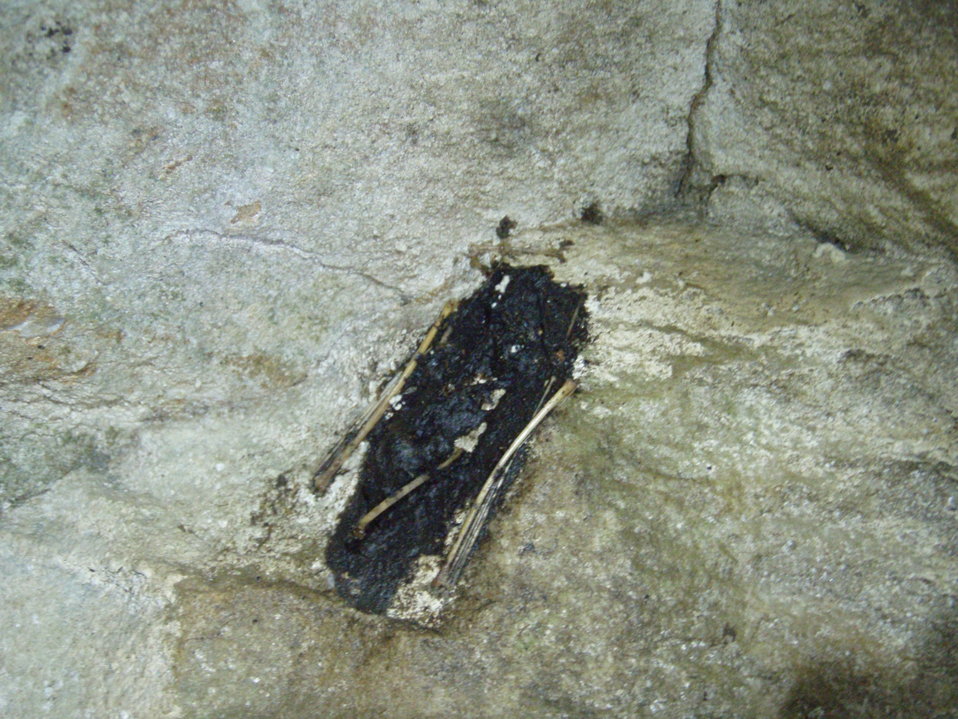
A bat carcass clings to the wall in Aeolus Cave, a WNS site in Vermont.